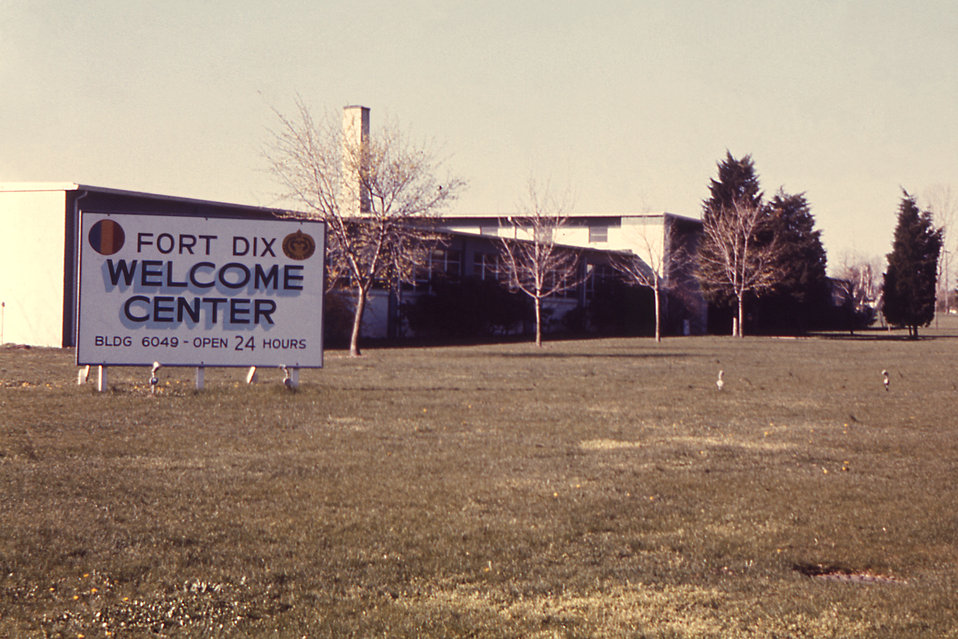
This 1976 image depicts the front of the Fort Dix, New Jersey, Welcome Center, which was the site of the first outbreak of the A/New Jersey/76 strain of influenza A (H1N1) serotypes, which in 1976 were labeled Hsw1N1, influenza virus.